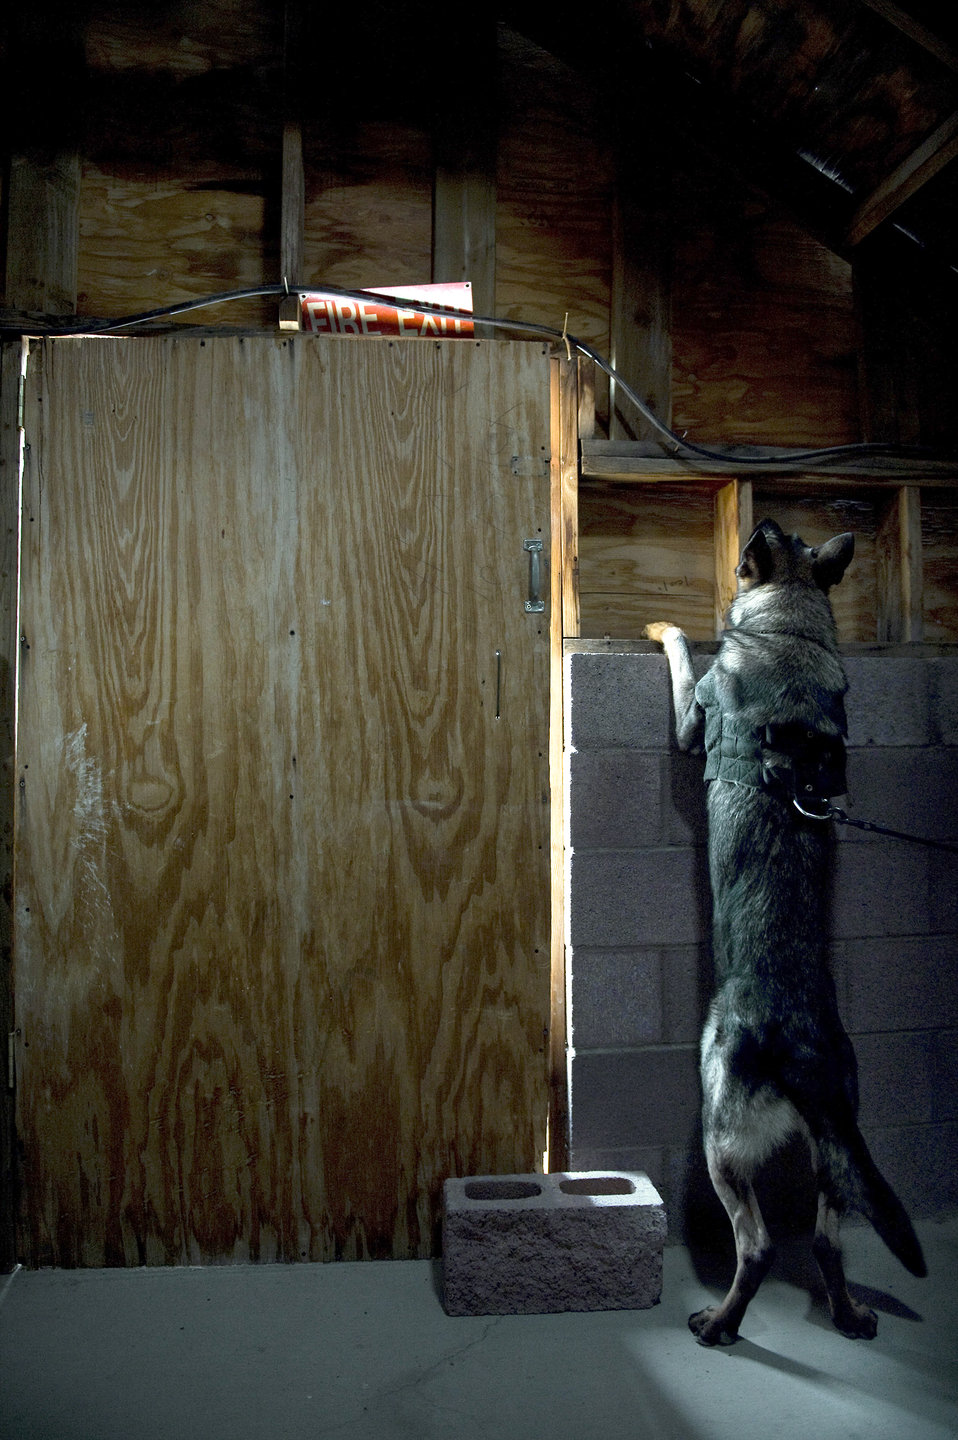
Nellis MWD training

Pike, a MWD, searches for explosives during a joint explosive detection training exercise Dec. 16, 2010, at Nellis Air Force Base, Nev. Military working dog handlers from the 99th Security Forces Squadron worked with 25 canine teams from the Las Vegas area.